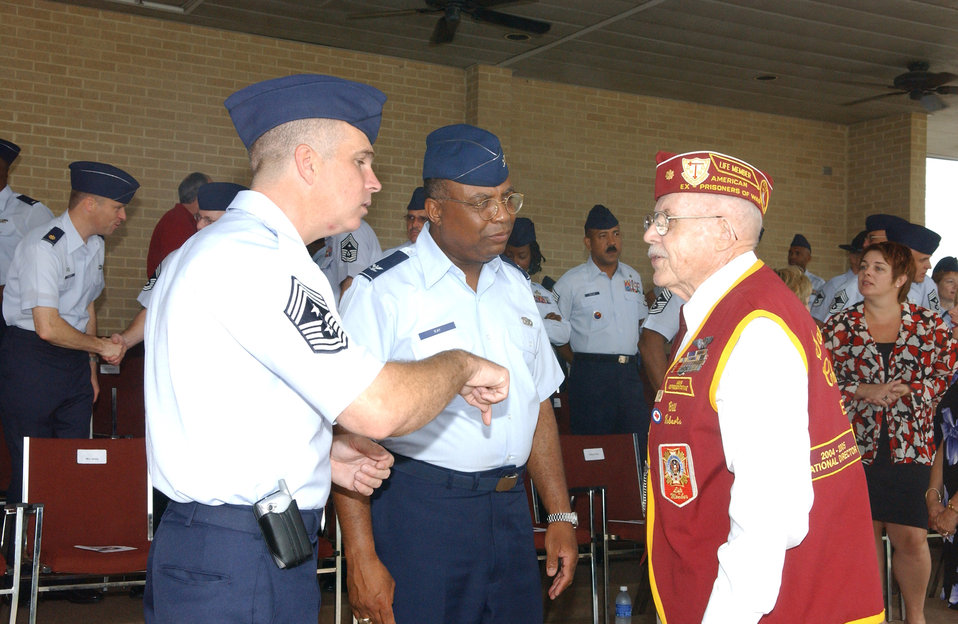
Basic training graduation ceremony focuses on POW/MIA Day

Chief Master Sgt. Dwayne Hopkins and Col. Stevenson Ray chat with retired Maj. Bill Roberts during the 37th Training Wing basic training graduation parade Sept. 15 at Lackland Air Force Base, Texas. The parade recognized POW/MIA Day. Major Roberts was a World War II POW after his B-17 Flying Fortress was shot down over Czechoslovakia. Chief Hopkins is the 37th TRW command chief and Colonel Ray is the wings director of staff.